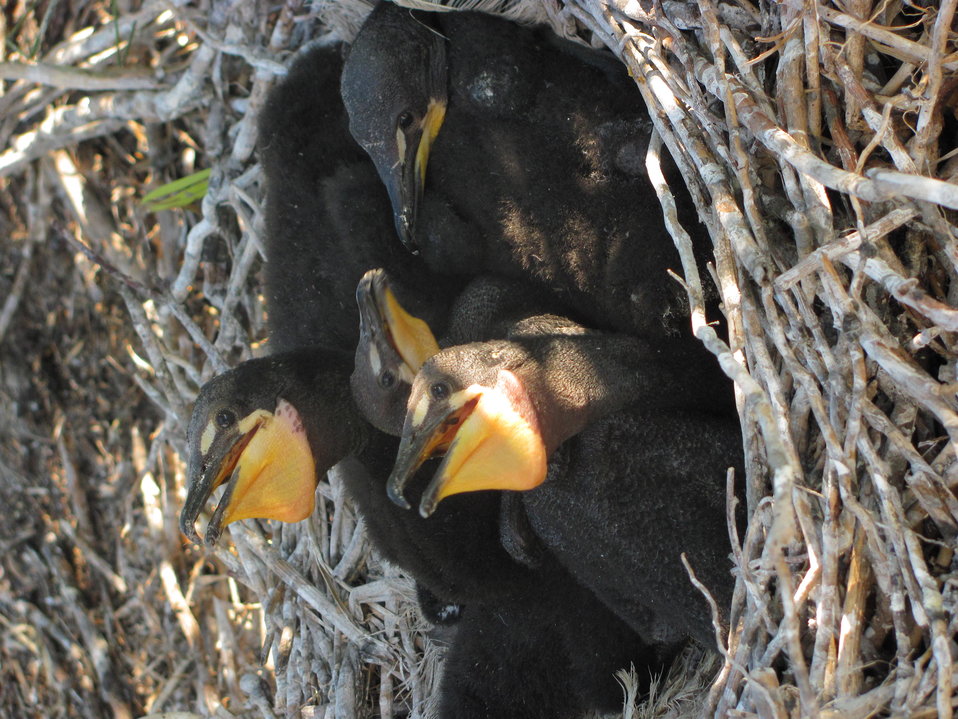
Double-crested Cormorants

This group of young Double- crested Cormorants were found on the south island of Chase Lake National Wildlife Refuge.

Location: Chase Lake National Wildlife Refuge, ND (2012)

Credit: Char Binstock / USFWS

Photo Contest Entry #99